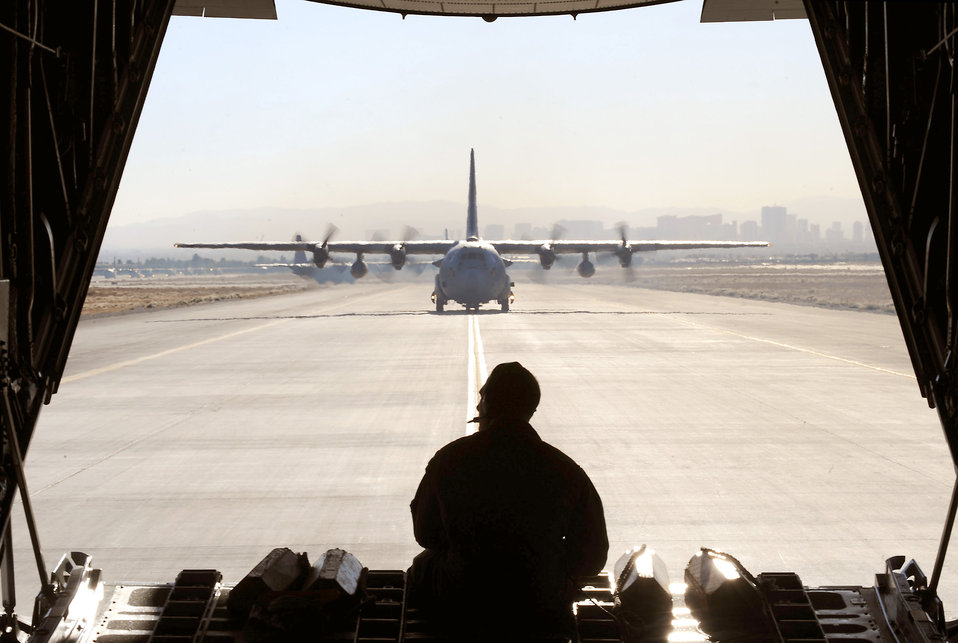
Mobility Air Forces Exercise

Staff Sgt. Grant Lane watches a C-130 Hercules taxi during a Mobility Air Forces Exercise Nov 17, 2010, at Nellis Air Force Base, Nev. Sergeant Lane is assigned to the 29th Weapons Squadron at Little Rock AFB, Ark.